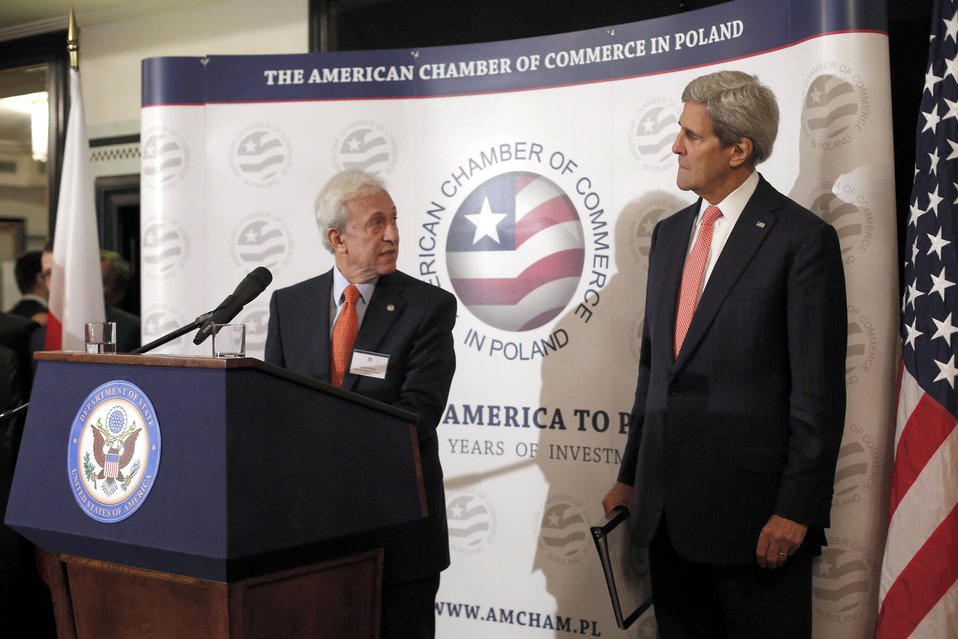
AmCham Chairman Wancer Introduces Secretary Kerry

American Chamber of Commerce Chairman Joseph Wancer introduces U.S. Secretary of State John Kerry to members of the American Chamber of Commerce in Warsaw, Poland, on November 5, 2013.